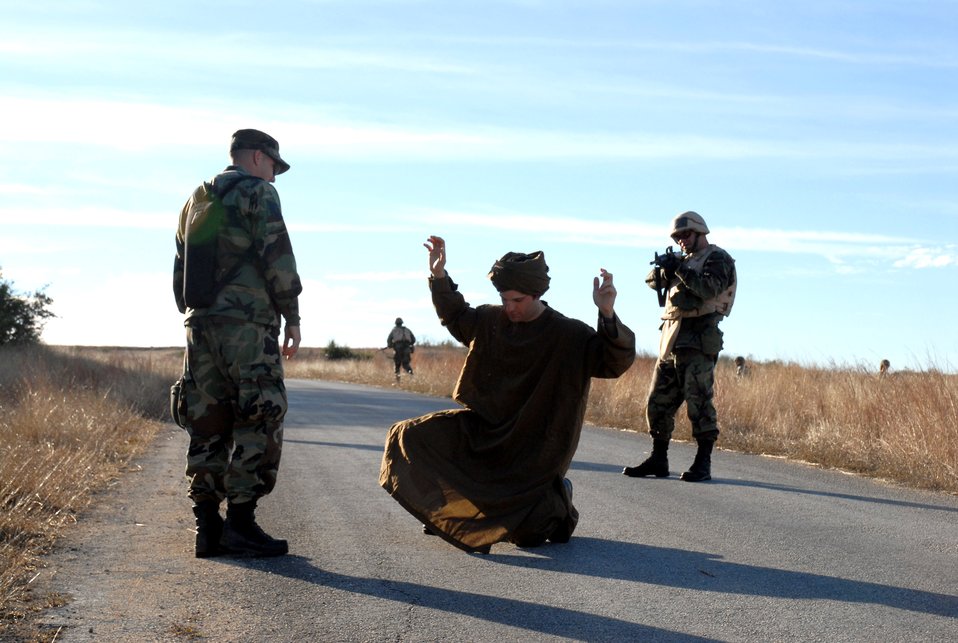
Battlefield training makes warriors out of Airmen

Maj. Roy Thrailkill (right) simulates challenging an insurgent Jan. 10 during the new Common Battlefield Airman Training Bridge course held at Camp Bullis, Texas. Instructor Tech. Sgt. Christopher Dunstone acts as an interpreter. CBAT-B course instructor Staff Sgt. Joe Pearcy acts as the insurgent. CBAT-B course cadre consist of Airmen of all specialties, including security forces, transportation, explosive ordnance disposal, survival, combat weather, tactical air control, combat control and pararescue. Major Thrailkill is a member of the Air Education and Training Command at Randolph Air Force Base, Texas.